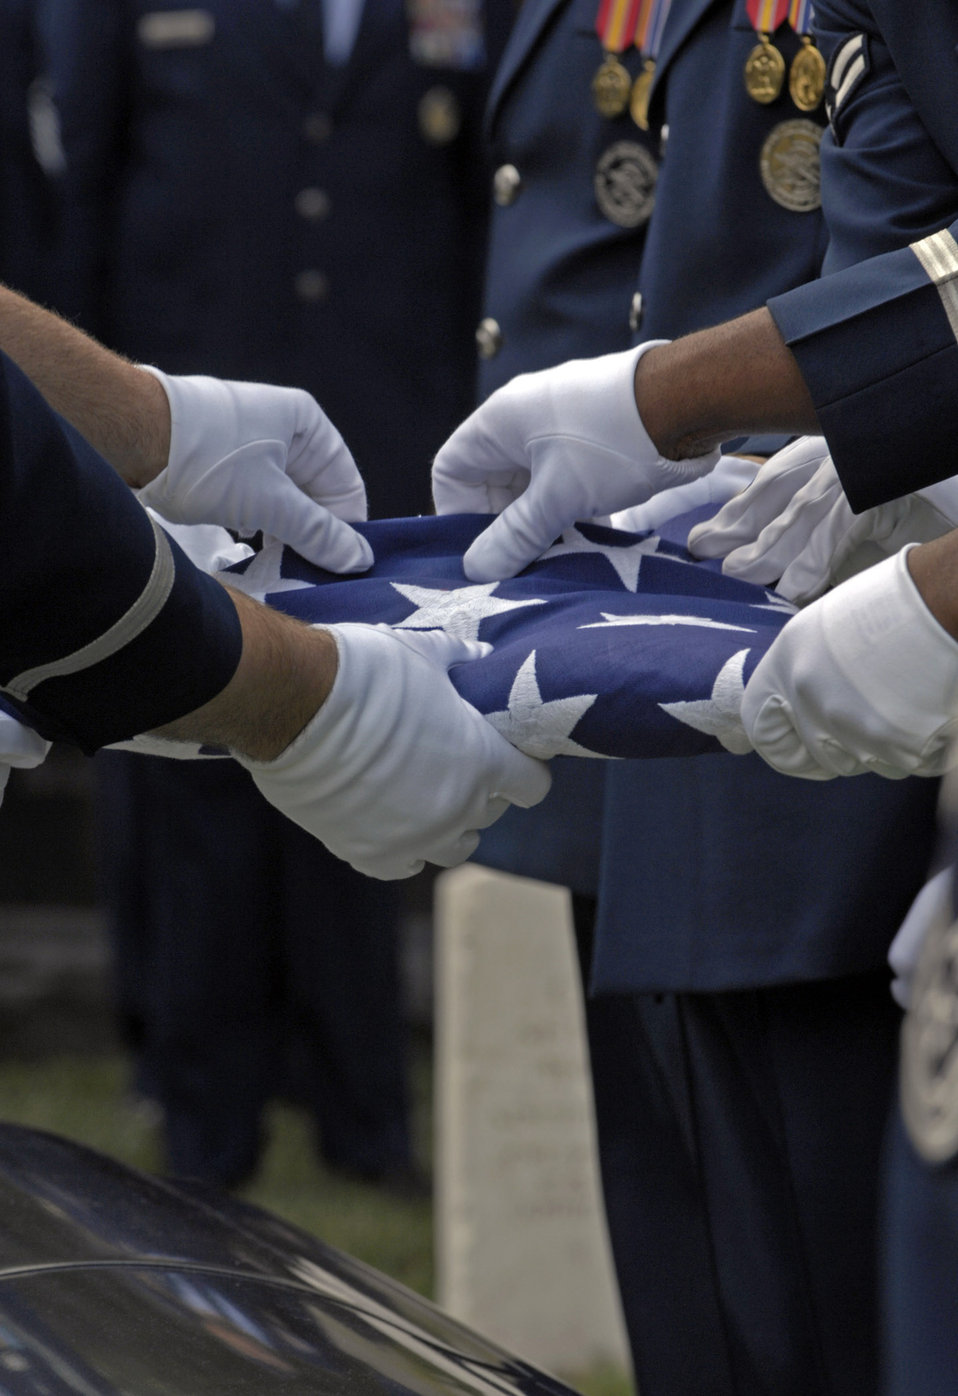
Chief Pfingston laid to rest at Arlington

Air Force Honor Guard pallbearers fold the United States flag in honor of former Chief Master Sergeant of the Air Force Gary R. Pfingston at his burial site July 6 at Arlington National Cemetery, Va. The 10th CMSAF was born in Evansville, Ind., and entered the Air Force in February 1962. He passed away June 23 in San Antonio.